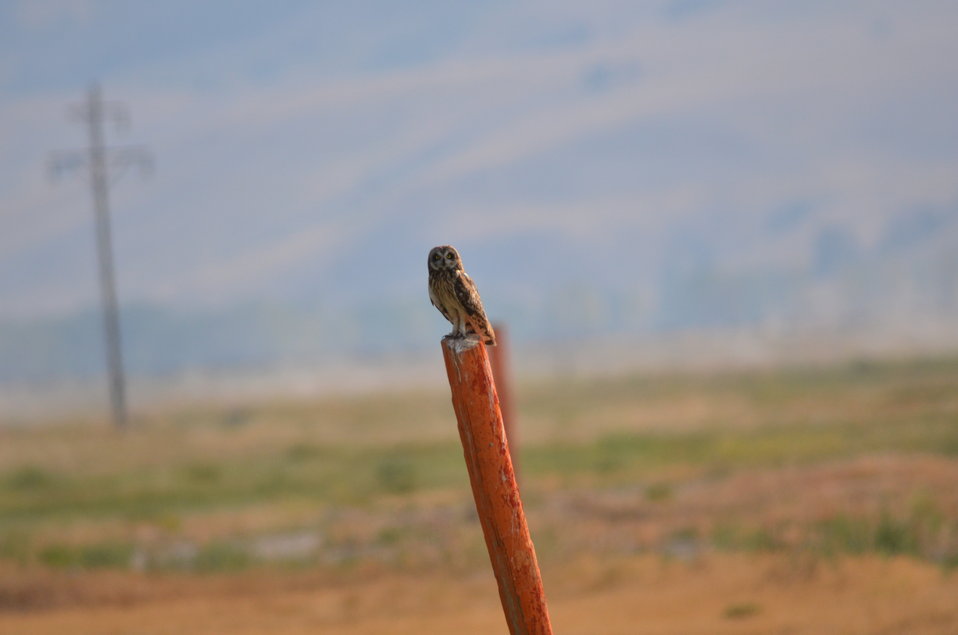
A Regular Visitor to the Refuge

Finding short-eared owls in the Jackson area is always possible in season, but it's not an every-year opportunity. During the summer of 2012, National Elk Refuge staff and volunteers saw one almost every morning in the same area, moving from post to post.

Credit: USFWS / Bobby Harkey, National Elk Refuge volunteer